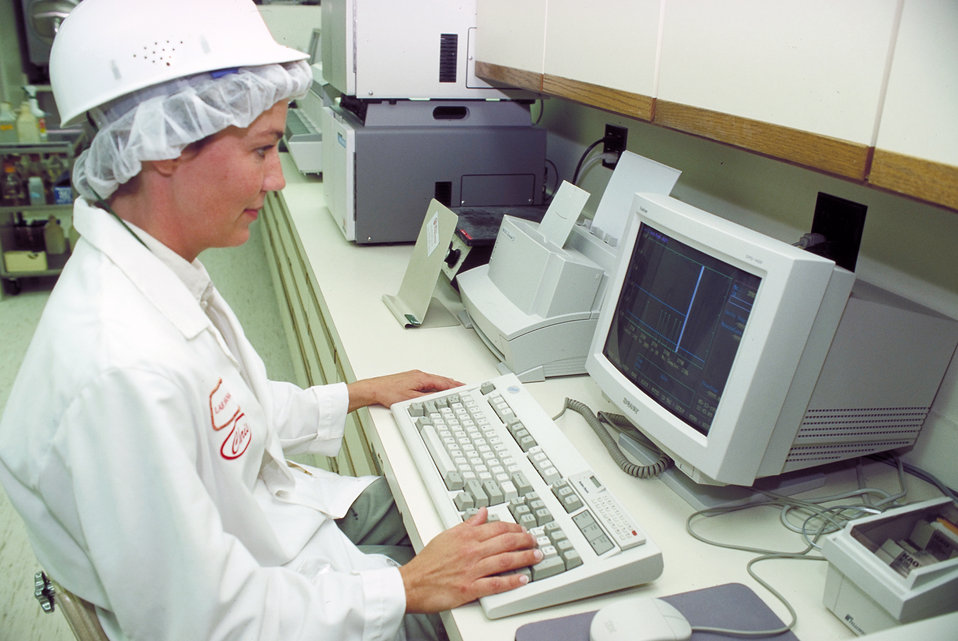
Plant employee enters and reviews computer generated data the plants Hazard Analysis and Critical Control Points (HACCP) plan on May 13, 1996.